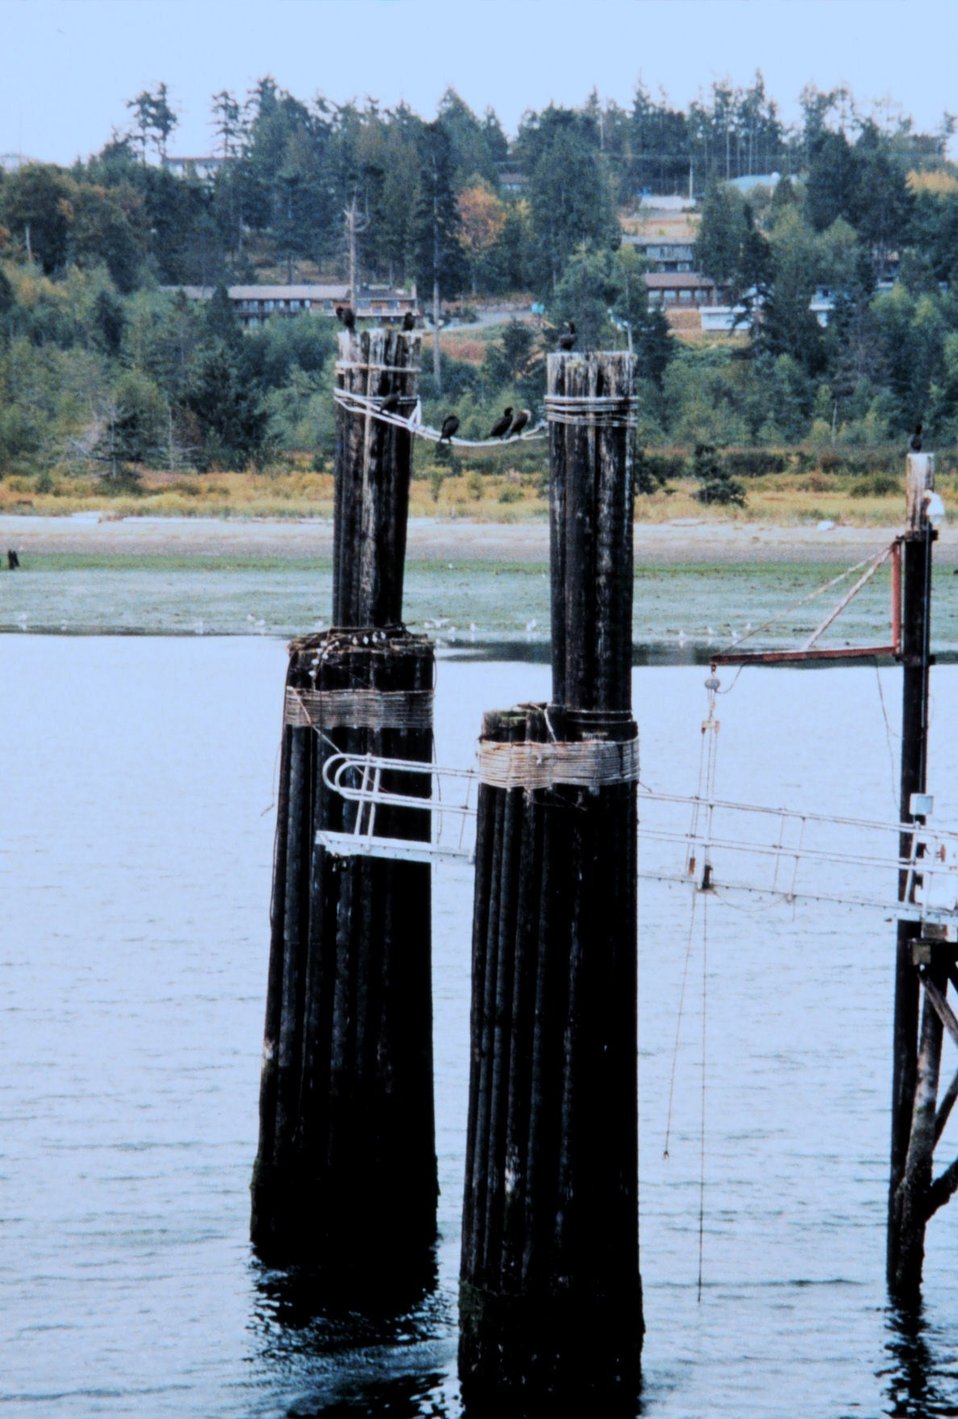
A Puget Sound ferry landing